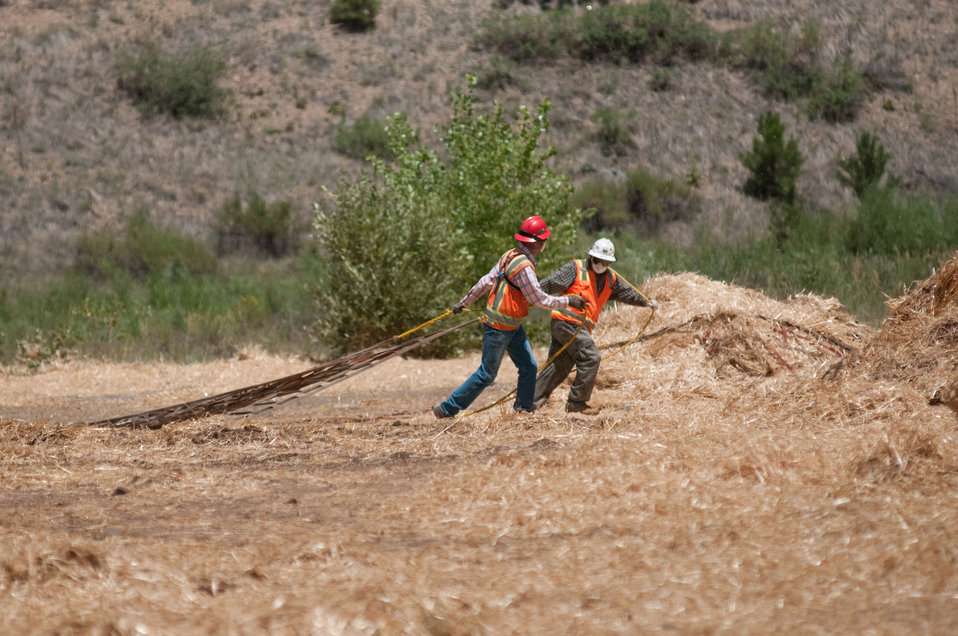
Load crews drag a cargo net into position and lay it out for two straw bales put onto it on Friday, July 20, 2012, at the spillway of Seaman Reservoir, near Fort Collins, Colorado. The grapple equipped frontloader will then loosen and adjust the weight of the load on cargo nets for helicopters to lift and drop them onto barren, burned out tributary lands, during the continuing aerial application of straw to mitigate soil and ash runoff from the mountainous terrain leading to reservoir, drinking water resource for the City of Greeley. Bell UH-1H (2-blade rotor) and A-Star Model B (3-blade rotor) aircraft launched from a landing zone at the foot of the reservoir spillway. The 100-150-foot cable holds and releases loads of certified straw weighing 1,400 – 2,000 pounds. Forest service lands received straw, while private and other lands receive a seed mix and straw to promote ground cover plant growth on ash-covered lands. In total, 1,800 tons of straw will be applied during the 14-day operation. One quarter of the cost was paid by the City of Greeley and the U.S. Department of Agriculture funded the remainder. The Hewlett Gulch Fire was started by a camper’s alcohol stove, on May 14, at the saddle of a picturesque mountain ridge along the Hewlett Gulch Trail of Poudre Canyon, in the Roosevelt National Forest, 60 miles north of Denver. At it’s more than 400 firefighters were battling fires being pushed by 50 mph winds that helped blacken over 12-square-miles of dry ground cover, brush and trees. Many of the trees were already dead and tinder dry from beetle-kill. The water in the reservoir remains clean and clear, while downstream water flow has gone from famous Colorado clear water to nearly black flows of water heavily laden with ash, silt, and burnt debris that recent thunderstorms have already washed down from the mountainsides.